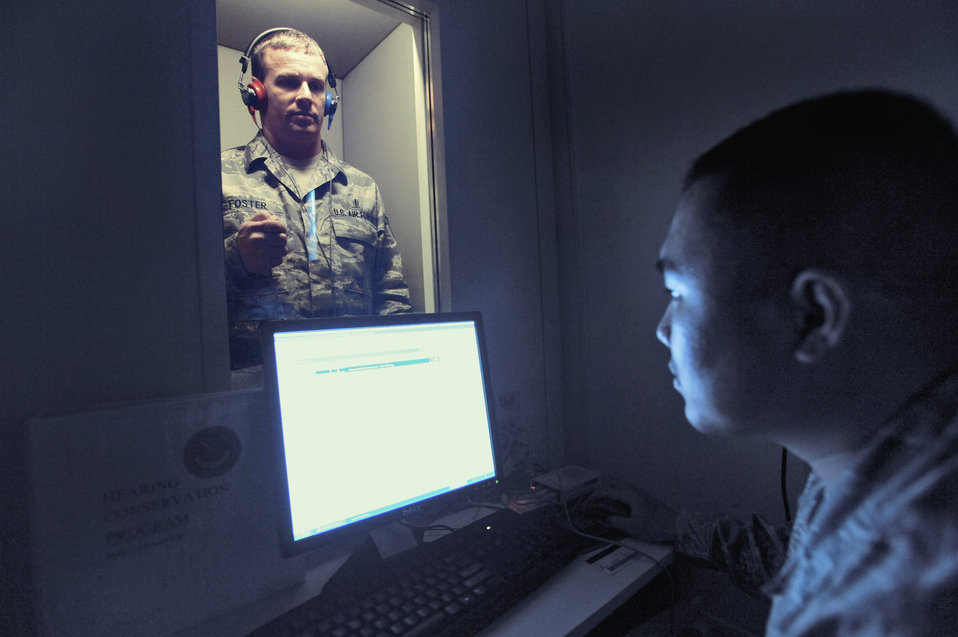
Public health maintains high standards, healthy force

Tech. Sgt. Duwayne Foster and Staff Sgt. Rommel Hernandez run an operations check on the new hearing test booth April 30 at an air base in Southwest Asia. The base is the first in the U.S. Central Command's area of responsibility to have a hearing test booth. Sergeant Foster is the NCO in charge of public health for the 379th Expeditionary Medical Group, and is a native of Mobile, Ala. Sergeant Hernandez is the assistant NCO in charge of public health and hails from Arlington, Va. Both are deployed from Keesler Air Force Base, Miss.